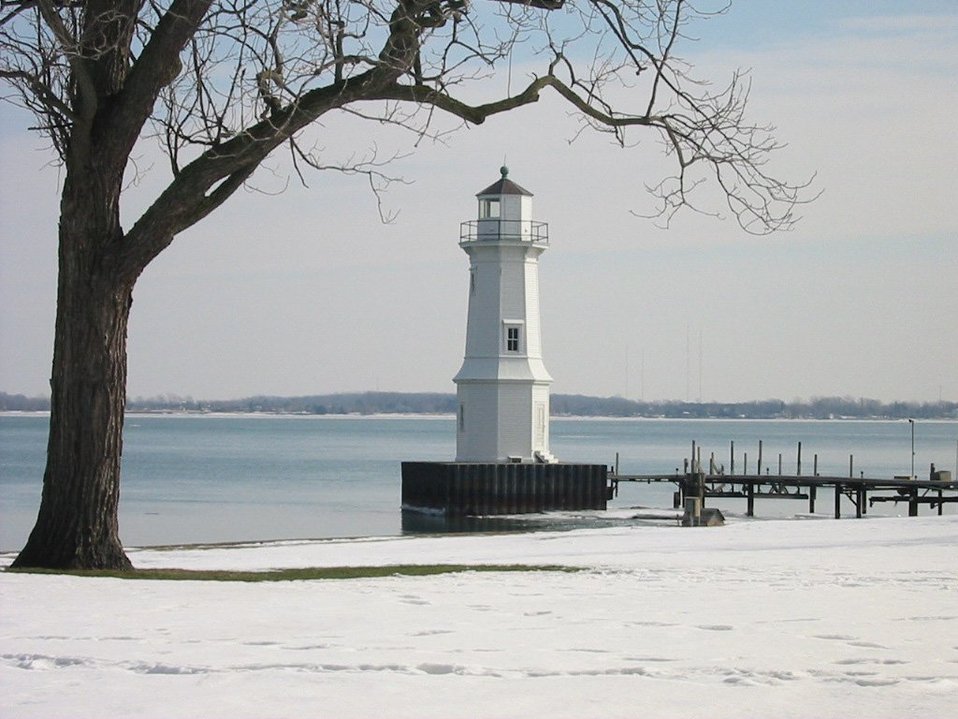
A cold and lonely lighthouse